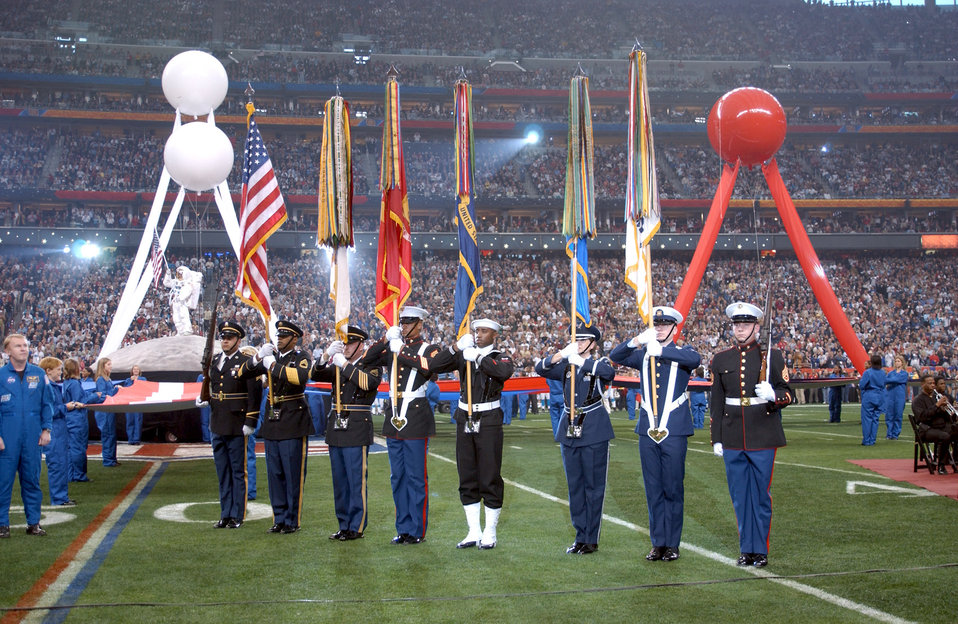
Representing at the Super Bowl

HOUSTON -- Tech. Sgt. Cindy Matzen (third from right) participates with the Texas Joint Military Forces Honor Guard during the one-year anniversary tribute to the Space Shuttle Columbia astronauts at Super Bowl ceremonies Feb. 1. Sergeant Matzen is assigned to the 209th Weather Flight at Camp Mabry.